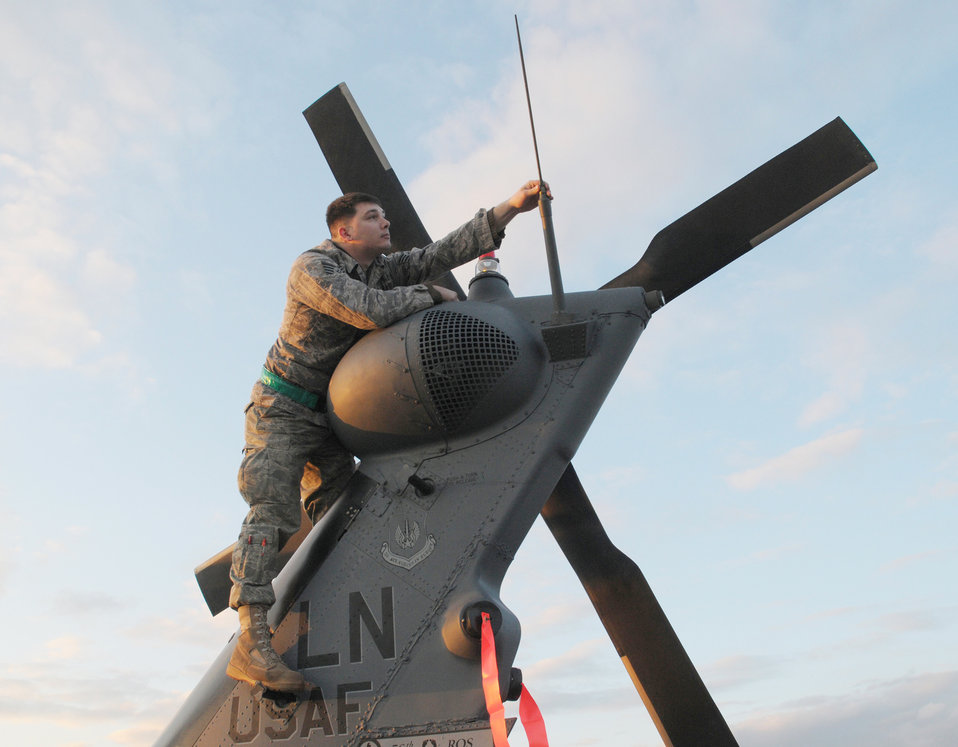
Fine-tuning good reception

Staff Sgt. Dustin Lough inspects the VHF antenna on an HH-60G Pave Hawk helicopter at RAF Lakenheath, England, March 1, 2010. The VHF antenna helps aircraft communicate with other aircraft and personnel on the ground. Sergeant Lough is a communications and navigations avionics journeyman with the 56th Helicopter Maintenance Unit.